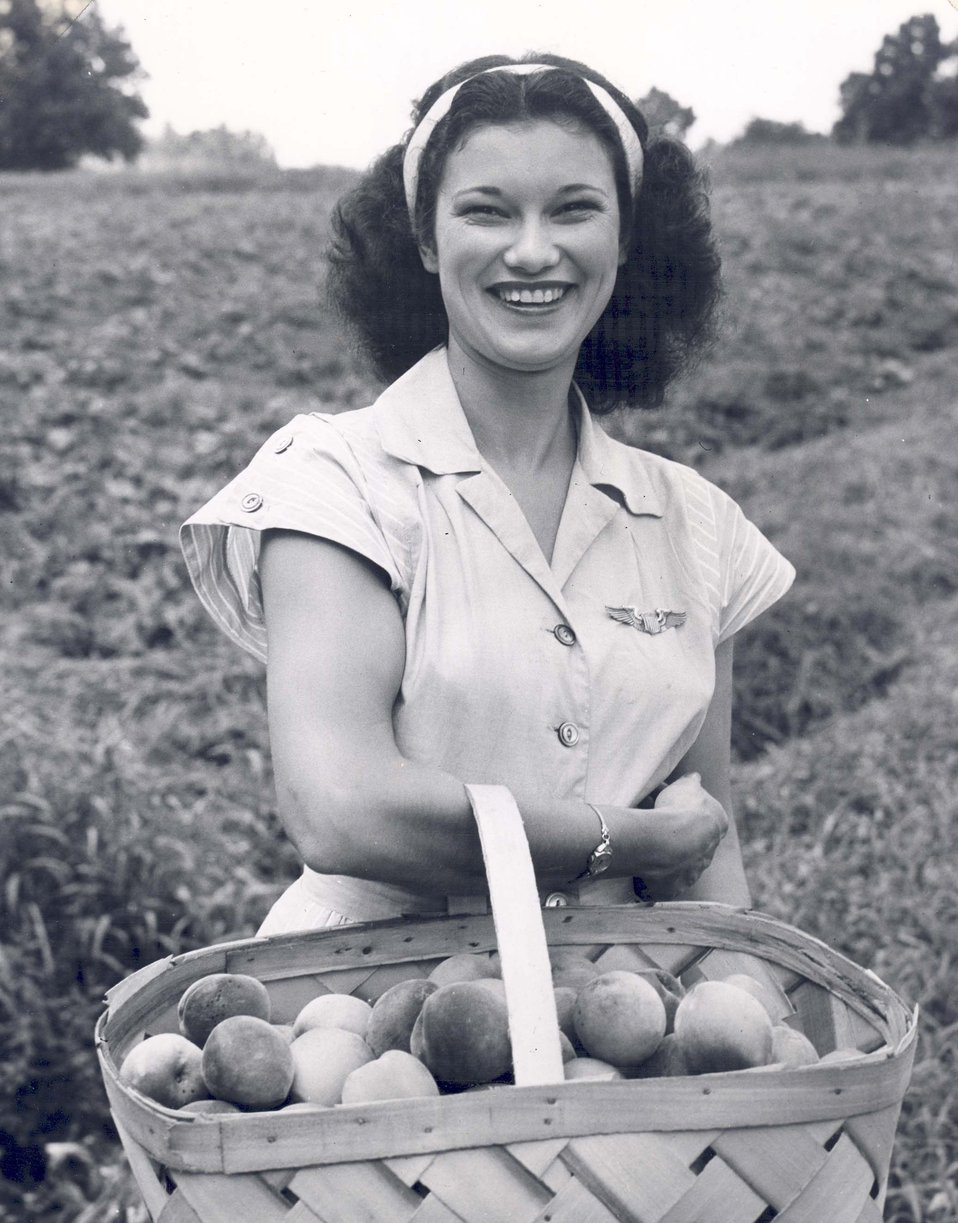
A farmwoman holds a basket of Georgia Peaches circa 1940's -50.